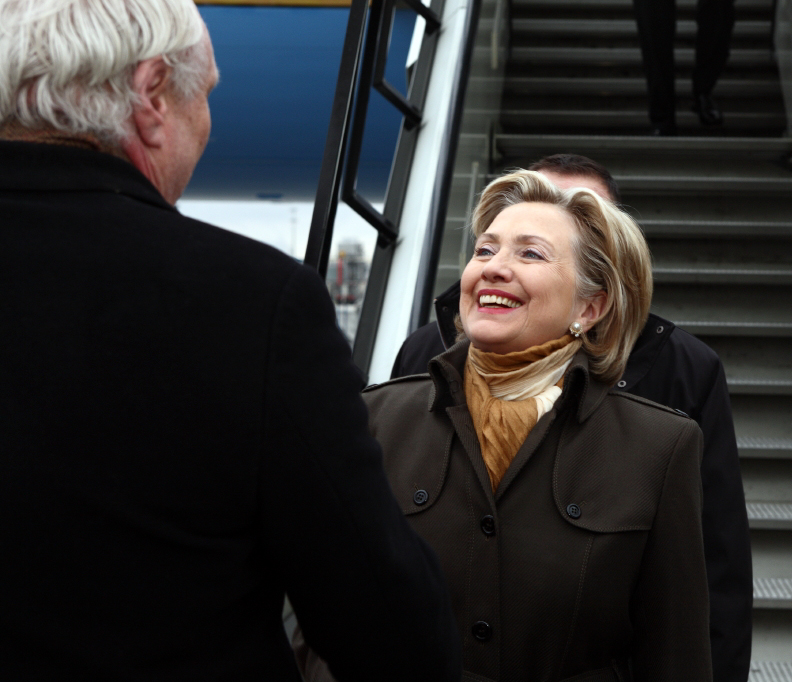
Arrival in Geneva, Switzerland

U.S. Secretary of State Hillary Rodham Clinton arrives in Geneva, Switzerland March 6, 2009.